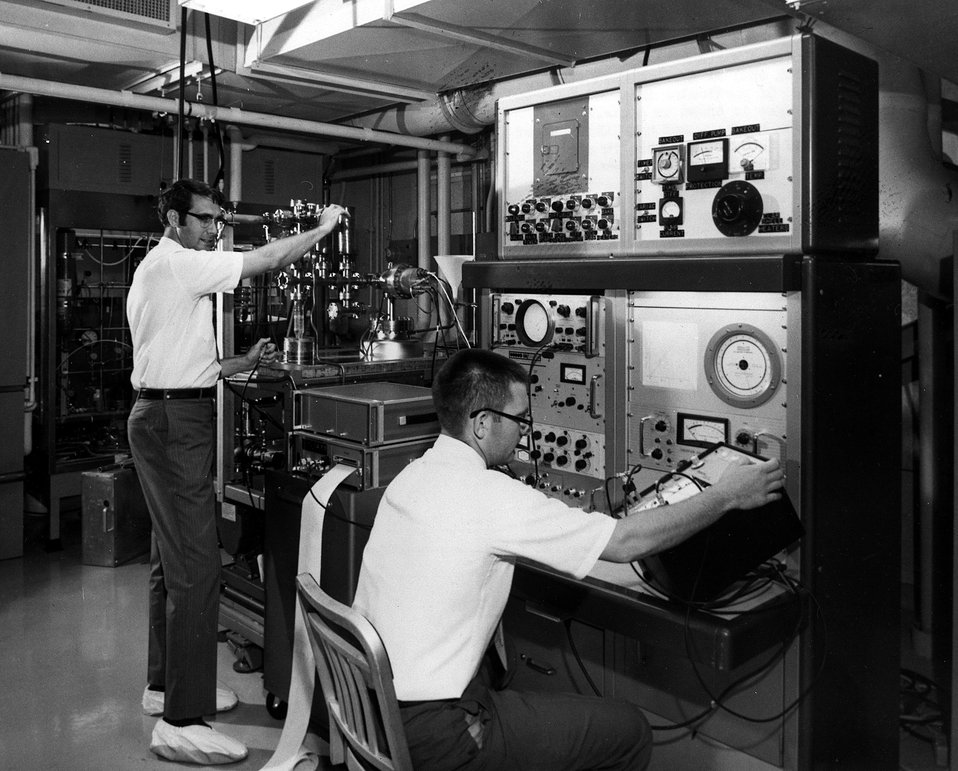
The instrument pictured can measure 1 part in 1 billion parts (0.001 ppm) of the lightest element known--hydrogen. Of particular interest to metallurgists, hydrogen is known to contribute significantly to the hardness and embitterment of stainless steel and transition metals in general. Circa 1972.